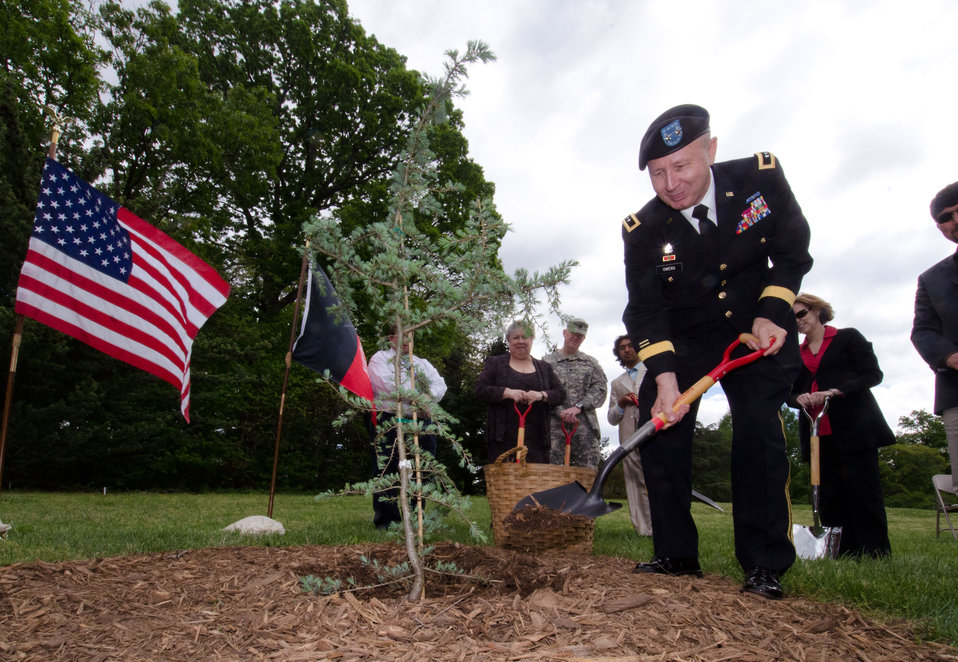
Special Assistant to the Director, Army National Guard Major General Darren Owens during the Arbor Day tree planting of a Cedrus deodara ('Karl Fuchs') at the National Arboretum, The tree is originally from Pakta Province and the most important tree in Afghanistan for timber.